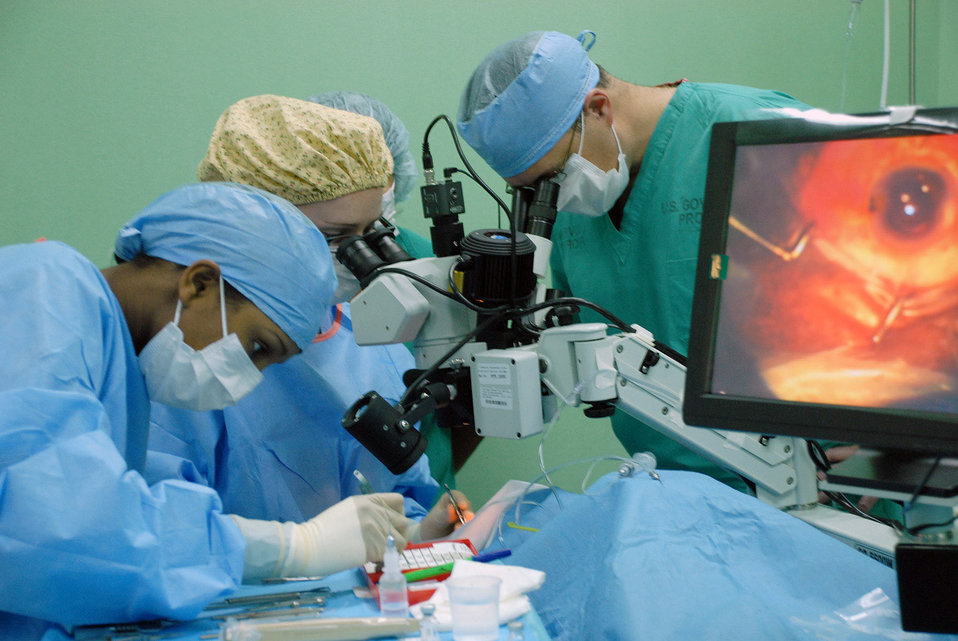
U.S. military medical teams provide care in Honduras

Senior Airman Shirley Taylor (left) prepares instruments as Capt. (Dr.) Megan McChesney and Lt. Col. (Dr.) Dave Zumbro remove a cataract from the eye of a patient Feb. 26 in Tela, Honduras. Cataract removal composes the largest portion of the procedures U.S. military doctors perform on elderly patients receiving care during eye surgical medical readiness training exercises. A 12-person joint ophthalmological eye surgery team conducted more than 70 surgeries as part of a U.S. Southern Command-sponsored MEDRETE Feb. 18 through 29. Airman Taylor is an opthomology technician.